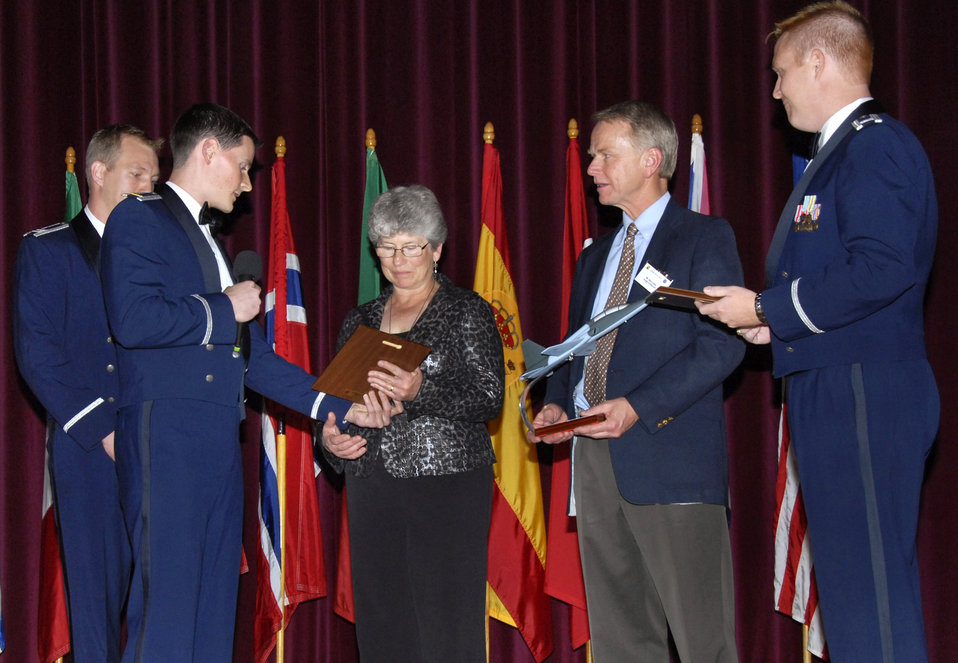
Airman honored, awarded wings posthumously

Capt. Barak Amundson and 2nd Lt. Ryan Bodenheimer present Penny Farquhar with a plaque that memorializes her son, 2nd Lt. Alec Littler, while Bob Littler and Capt. Michael Hansen watch Nov. 7 at Sheppard Air Force Base, Texas. The 80th Flying Training Wing honored Lieutenant Littler during the Euro-NATO Joint Jet Pilot Training Program's graduation of Class 08-08. The lieutenant, who was killed during a May 1 training mission, was scheduled to graduate with Class 08-08.